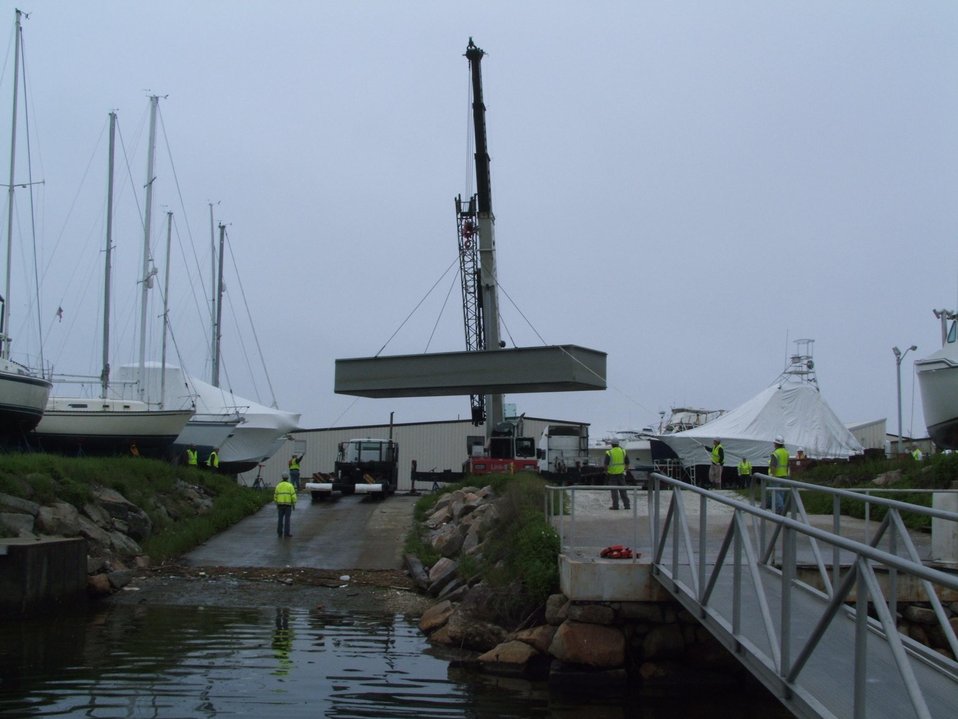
Barge deployment in New Bedford Harbor, Mass

Work crews carefully deploy a barge to prepare for the 2011 dredge season.
These barges, also known as flexifloats, can be attached and configured as needed to serve as temporary piers to support excavators and other heavy equipment.